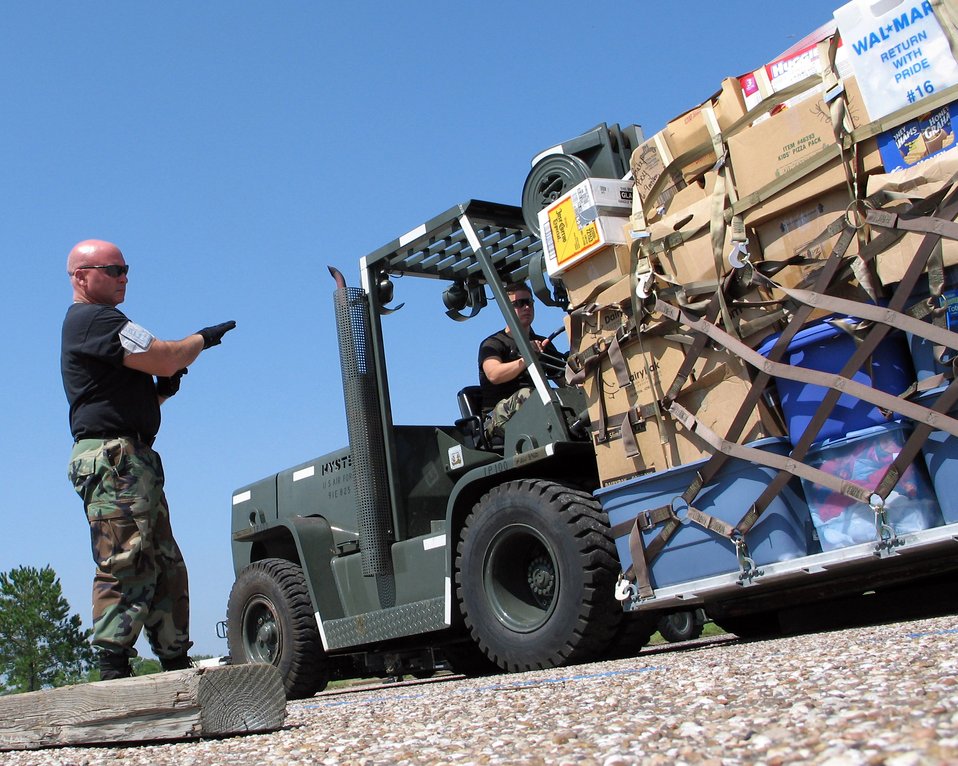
Hurricane Rita Humanitarian Relief

ELLINGTON FIELD, Texas -- Senior Master Sgt. Rick Curtis (left) marshals a pallet of humanitarian supplies onto the ramp here destined to support the Hurricane Rita relief effort. The supplies, moved Sept. 26, were donated by the Missouri Air National Guard. Sergeant Curtis is with the 136th Aerial Port Squadron at Naval Air Station-Joint Reserve Base Fort Worth, Texas.